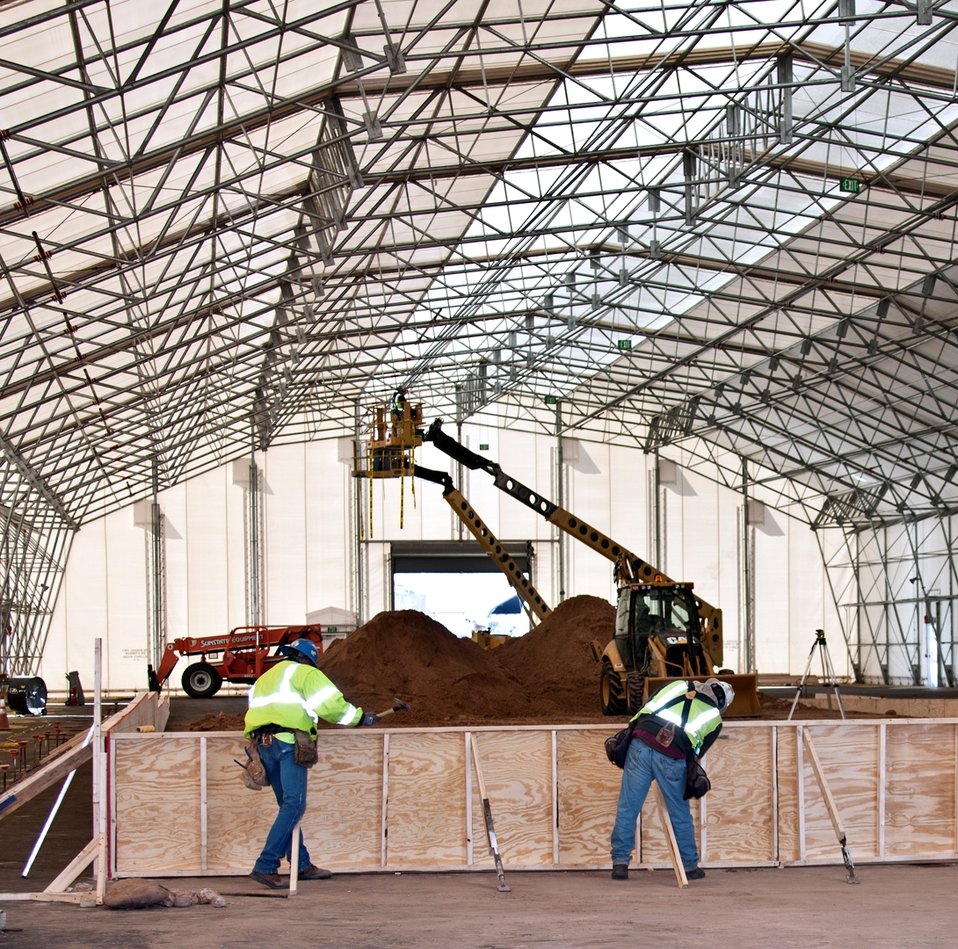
Construction Begins on New Waste Processing Facility

Construction has begun on a new facility that will help Los Alamos National Laboratory accelerate the shipment of transuranic (TRU) waste stored in large boxes at Technical Area 54, Area G.

The new facility will allow the Lab to repackage boxes as large as 25 feet long that contain TRU waste from as long ago as the 1970s.